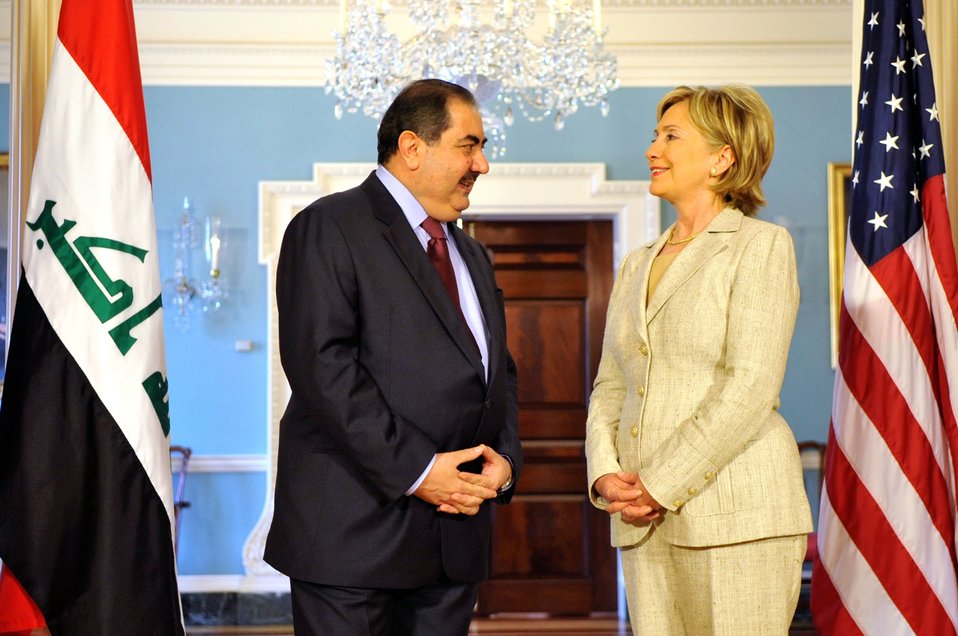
Secretary Clinton Meets With Iraqi Foreign Minister

U.S. Secretary of State Clinton holds a bilateral meeting with His Excellency Hoshyar Zebari, Minister of Foreign Affairs of the Republic of Iraq at the U.S. Department of State in Washington, DC July 16, 2009.